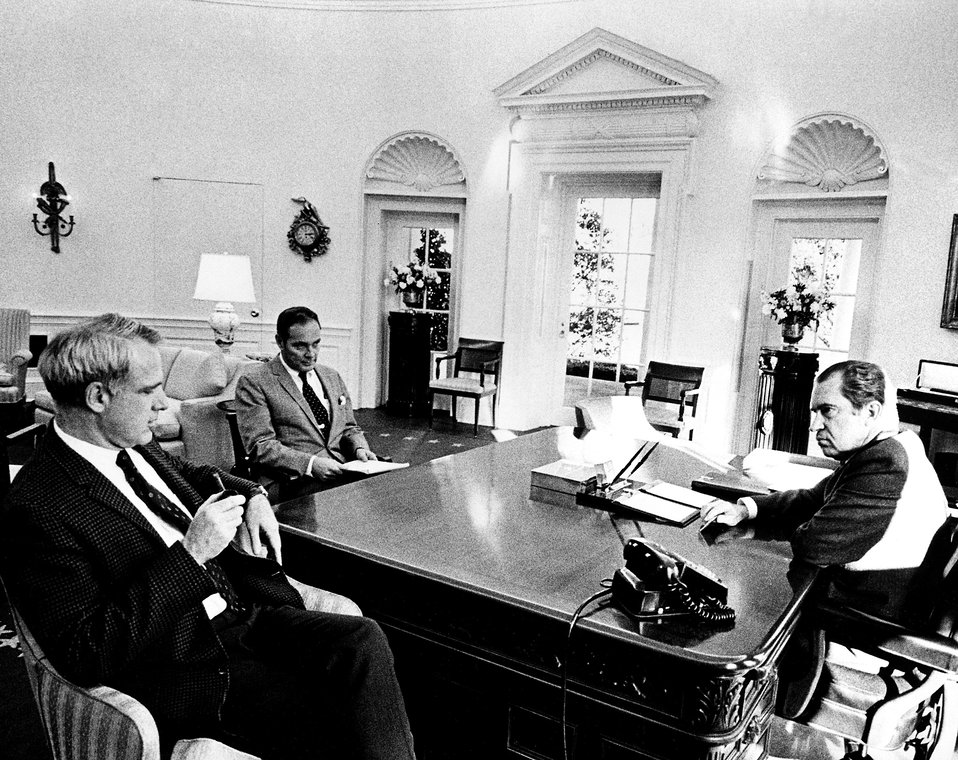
President Richard M. Nixon.